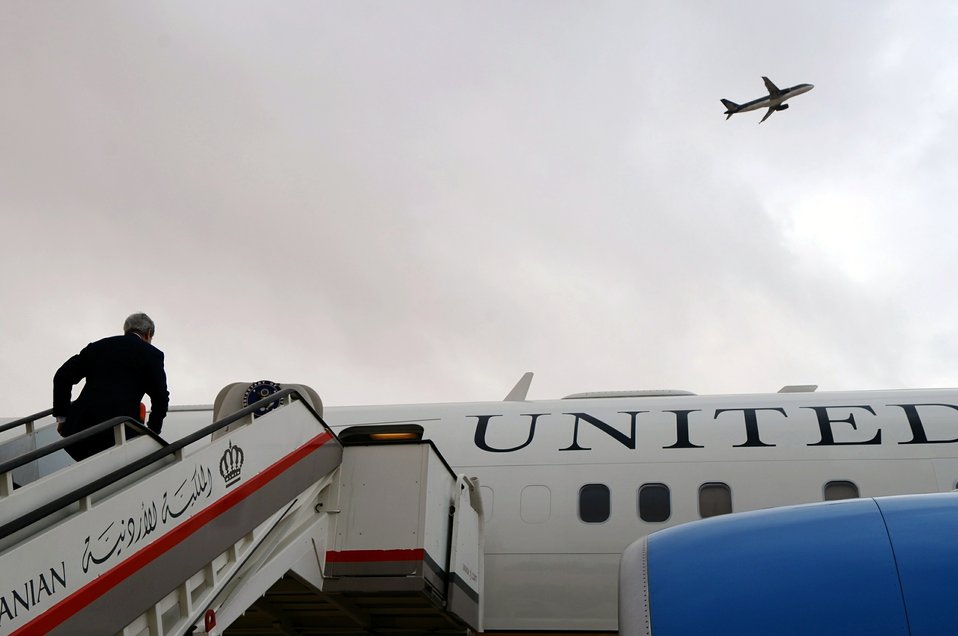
Secretary Kerry Departs Amman En Route to Tel Aviv

U.S. Secretary of State John Kerry jogs up the steps to the plane before departing Amman, Jordan, en route to Tel Aviv, Israel, and Geneva, Switzerland, for talks focused on Middle East peace and Iranian nuclear capability. on November 8, 2013.